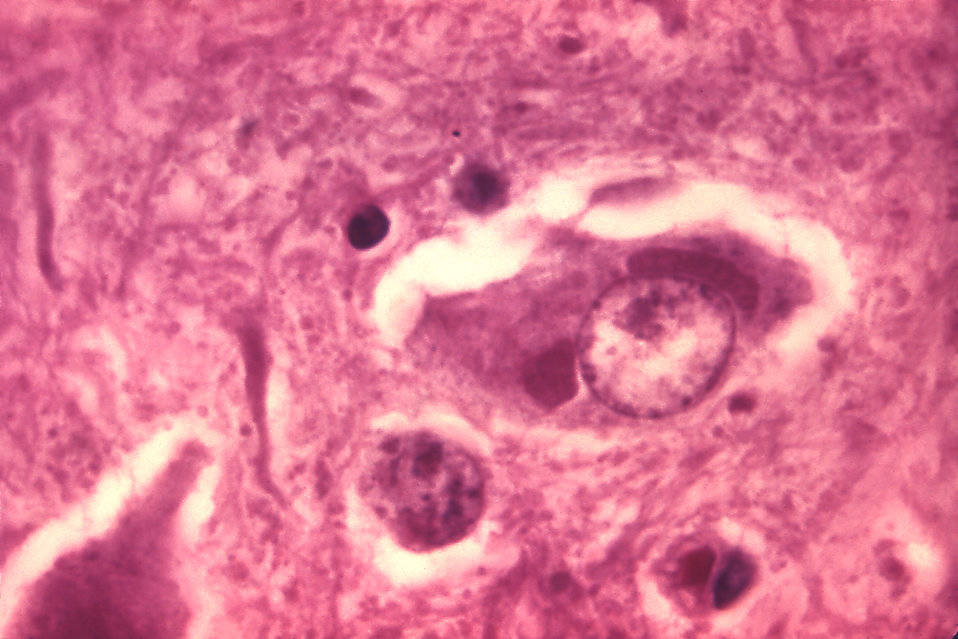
This micrograph depicts the histopathologic changes associated with rabies encephalitis prepared using an H&E stain.